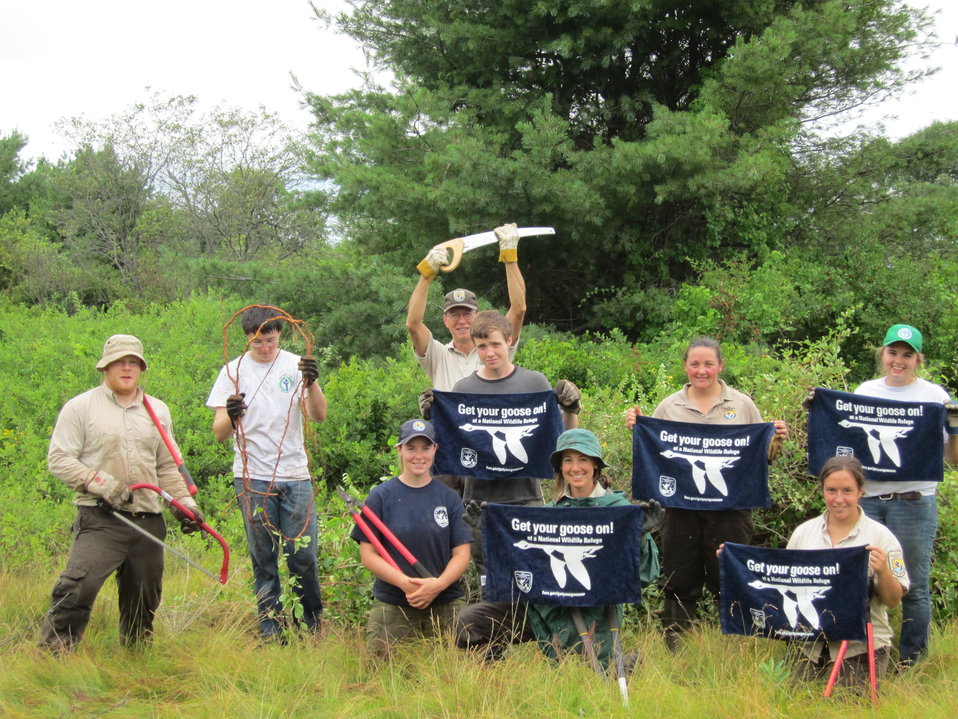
Get Your Goose On!

Standing in front of a morning's hard work.